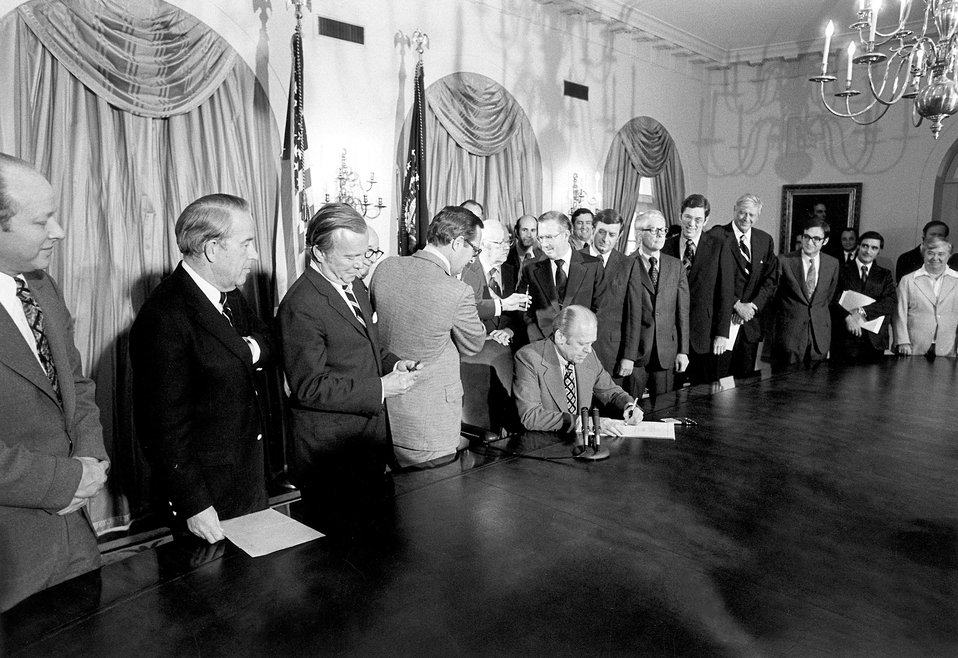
President Gerald R. Ford signing the Energy Reorganization Act of 1974 at the White House October 11, 1974.